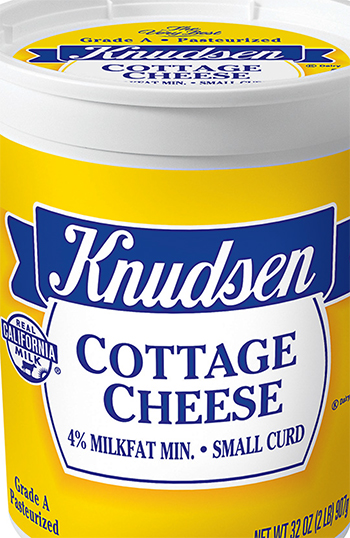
RECALLED – Cottage Cheese products

May 17, 2014 – Product Recall – Kraft Foods Group Voluntarily Recalls Select Cottage Cheese Products Due to Out-of-Standard Storage Temperatures
Certain Knudsen Cottage Cheese, Breakstone’s Cottage Cheese, Simply Kraft Cottage Cheese and Daily Chef Cottage Cheese Products Included in the Recall
.